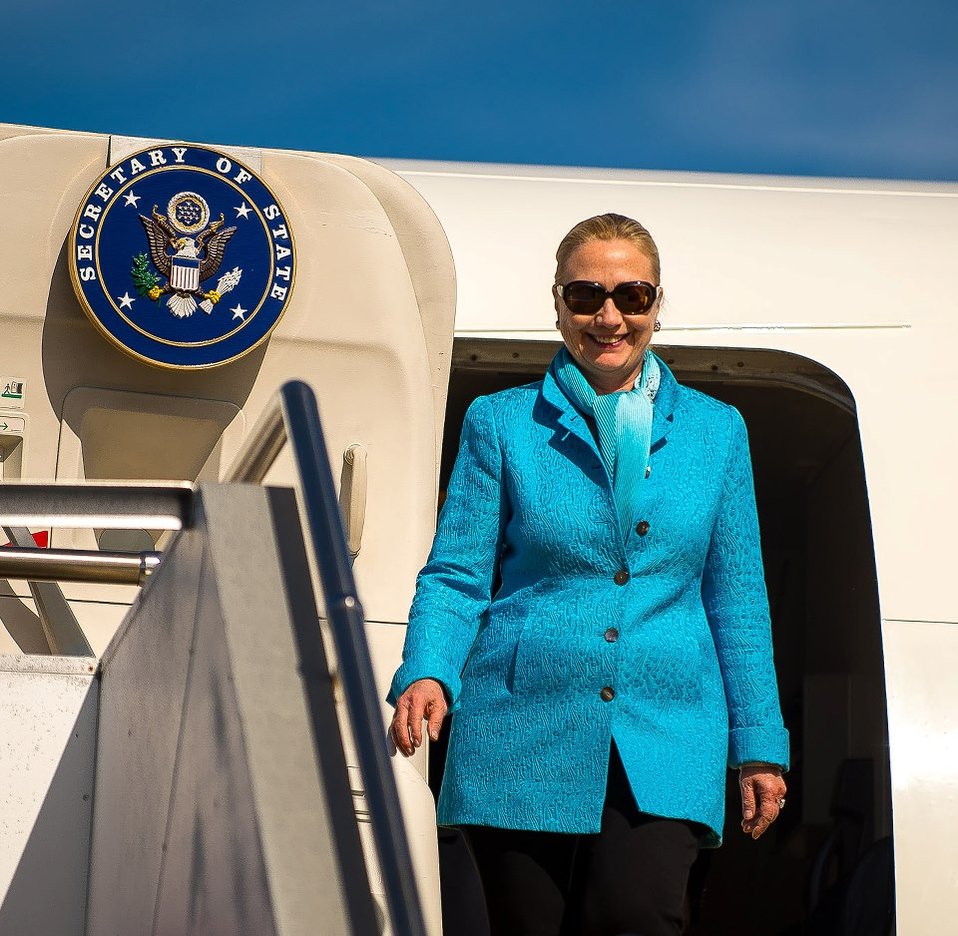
Secretary Clinton Arrives in Perth

U.S. Secretary of State Hillary Rodham Clinton arrives in Perth, Australia, November 12, 2012. [U.S. Embassy in Canberra, Australia photo by Travis Longmore/ Public Domain]